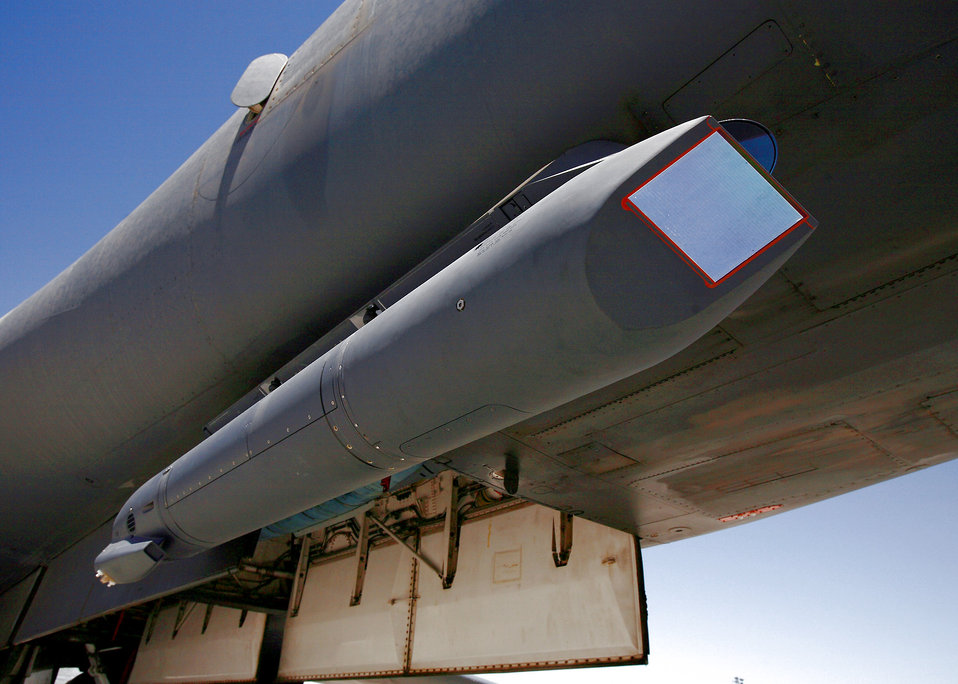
B-1B sniper pod aims to hit summer target

A sniper pod is mounted on the lower right of a B-1B Lancer fuselage. The sniper pod allows the aircrew to positively identify a target and quickly assess battle damage after an attack.